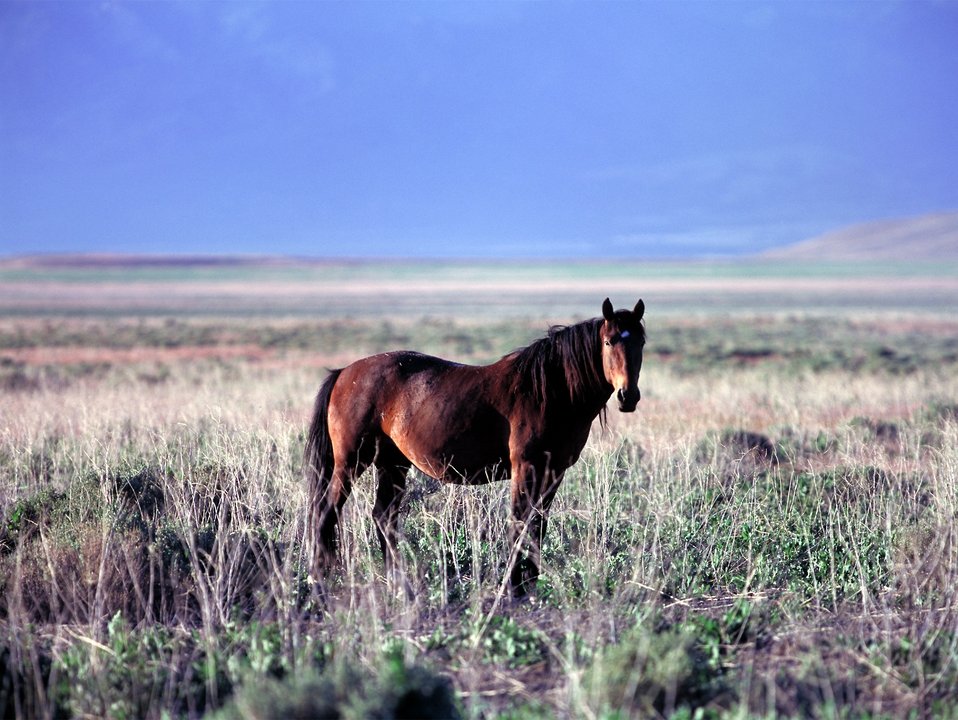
Onaqui Herd near Dugway, Utah.